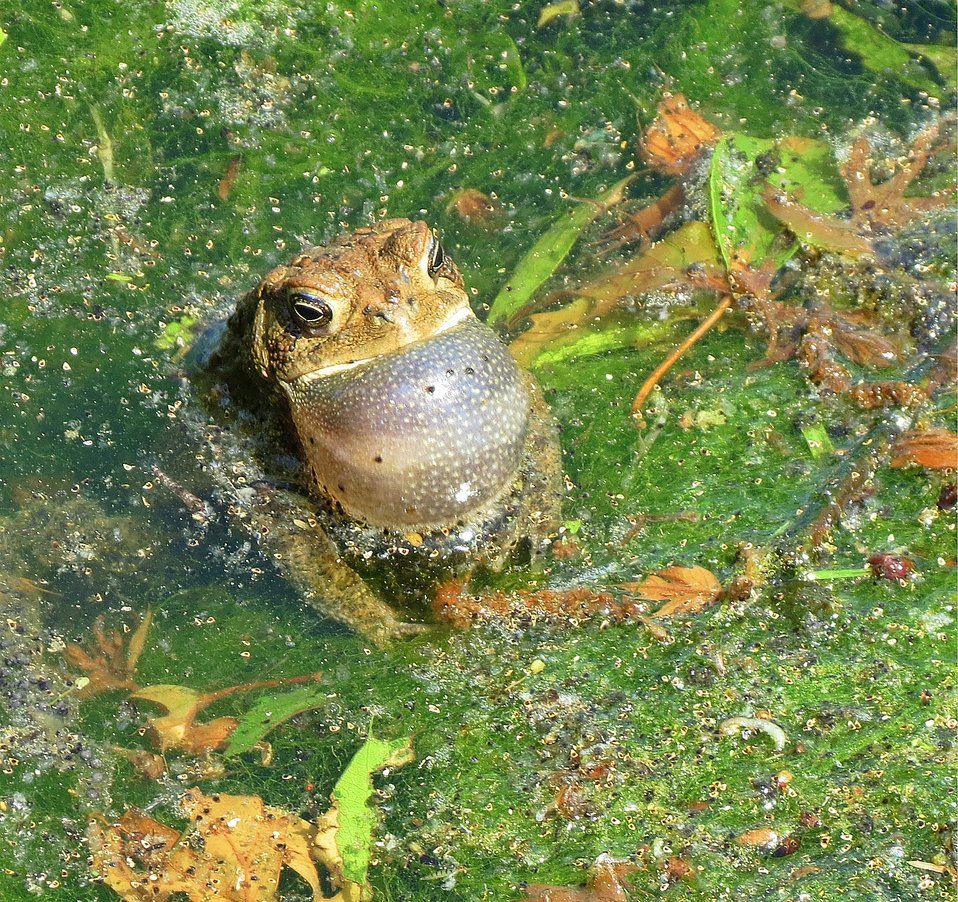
Croaking Eastern American toad in a pond at the Neosho National Fish Hatchery